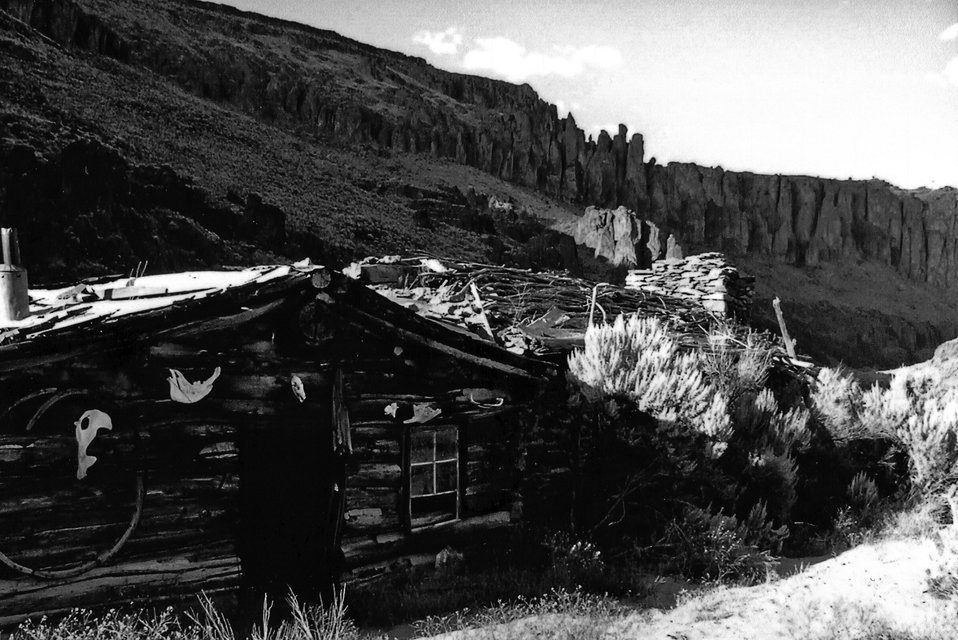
Abandoned cabin on the upper Owyhee River. Louse Canyon. Nick Miller, Vale Cultural 3